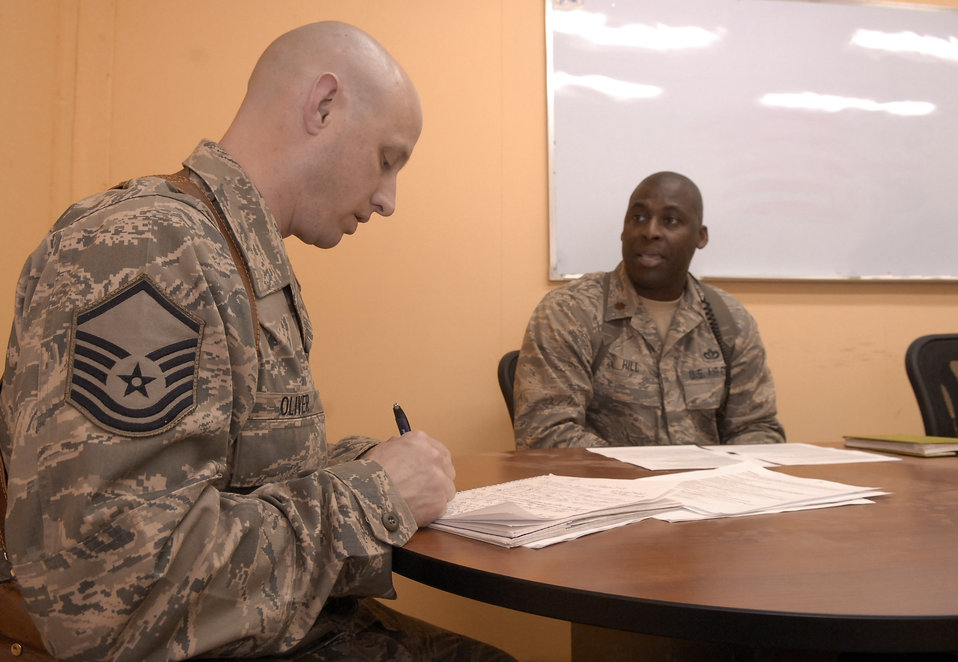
Air advisers

Master Sgt. Richard Oliver (left) interviews Maj. Eldrick Hill April 14, 2011, at Sather Air Base, Iraq. Sergeant Oliver is the 422nd Joint Tactics Squadron tactics, techniques and procedures flight chief. He was at Sather Air Base to conduct field interviews on graduates from the air adviser course at Joint Base McGuire-Dix-Lakehurst, N.J., seeking feedback to ensure the school is meeting operational needs. Major Hill is the Iraq Training and Advisory Mission-Air logistics lead engineer.